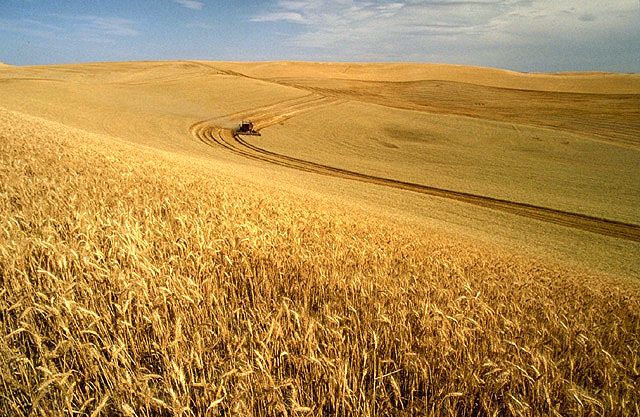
Harvest

wheat harvest. Scott Bauer/USDA